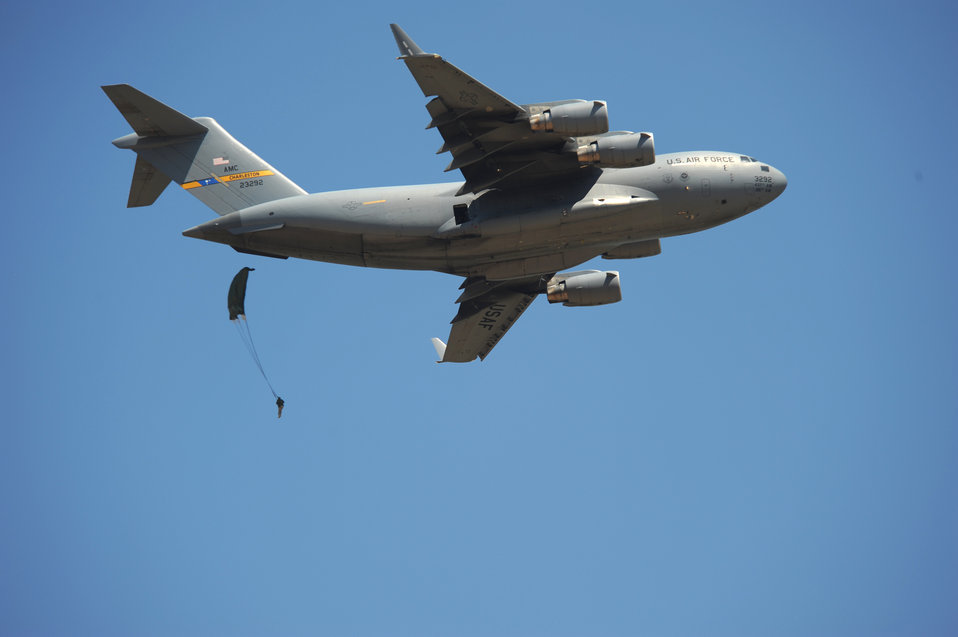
Perfect jump

A U.S. Army paratrooper parachutes from a C-17 Globemaster III cargo aircraft from Joint Base Charleston, S.C., during a joint forcible entry exercise June 21, 2010. The 82nd Airborne Division at Fort Bragg, N.C., uses JFEX to train for real-world contingency operations.